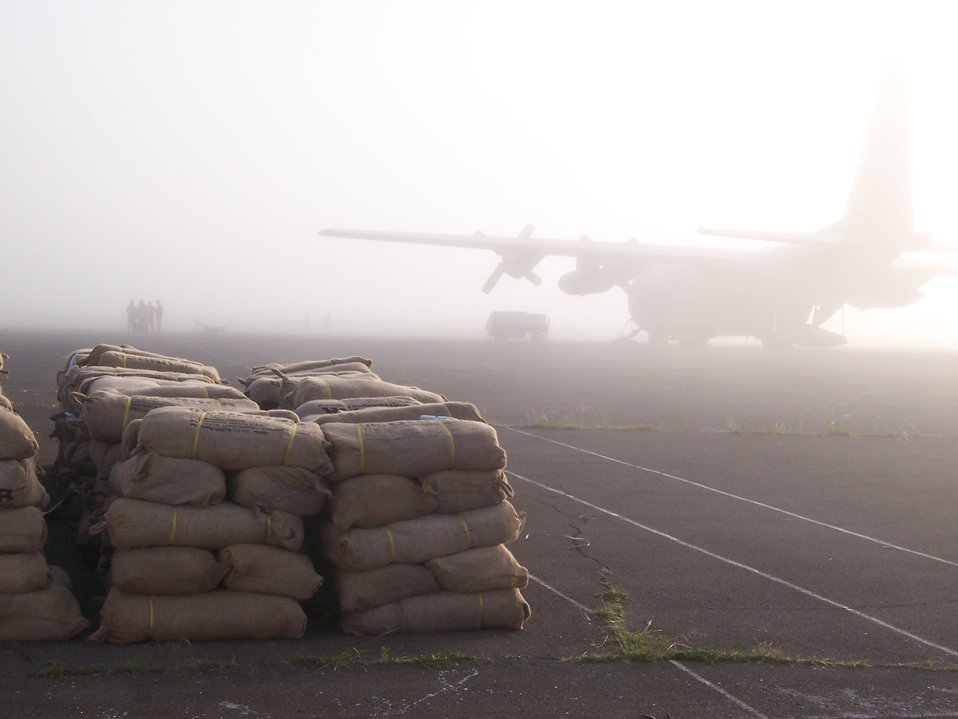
AF delivers much needed supplies to Kenya

A C-130 Hercules assigned to the 379th Air Expeditionary Wing awaits relief supplies Dec. 9 destined to flood victims in Kenya. Aircrews from the 746th Expeditionary Airlift Squadron based in Southwest Asia are flying flood relief missions in support of Operation Unity Knight.